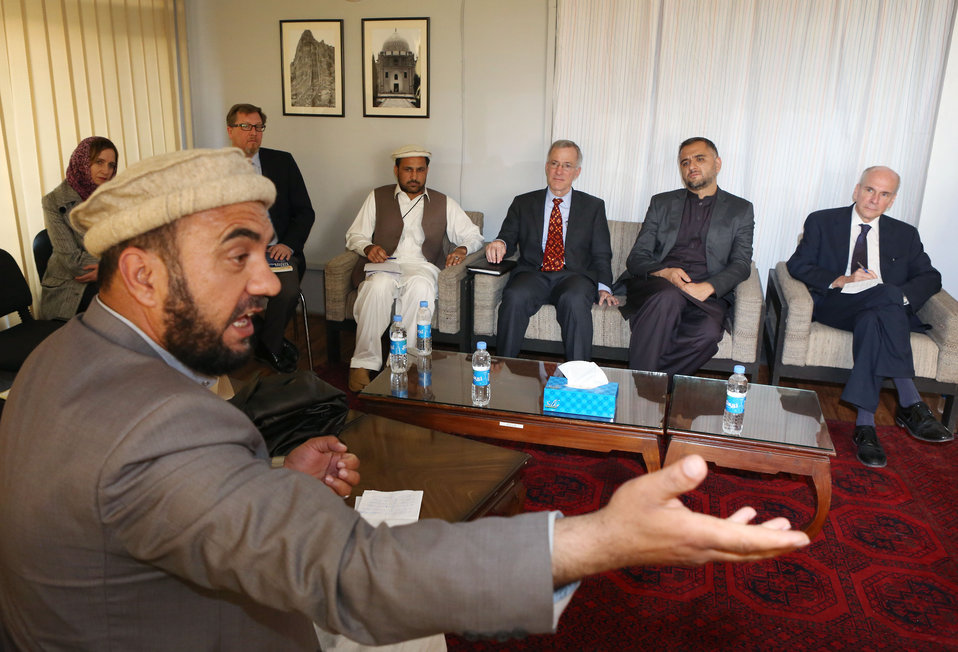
Deputy Ambassador P. Michael McKinley and USAID Mission Director William Hammink met with elders from Khost, Logar, and Paktiya on April 16, 2014 in Kabul. The elders provided community perspectives on rule of law, peace, security, and post-election Afgha